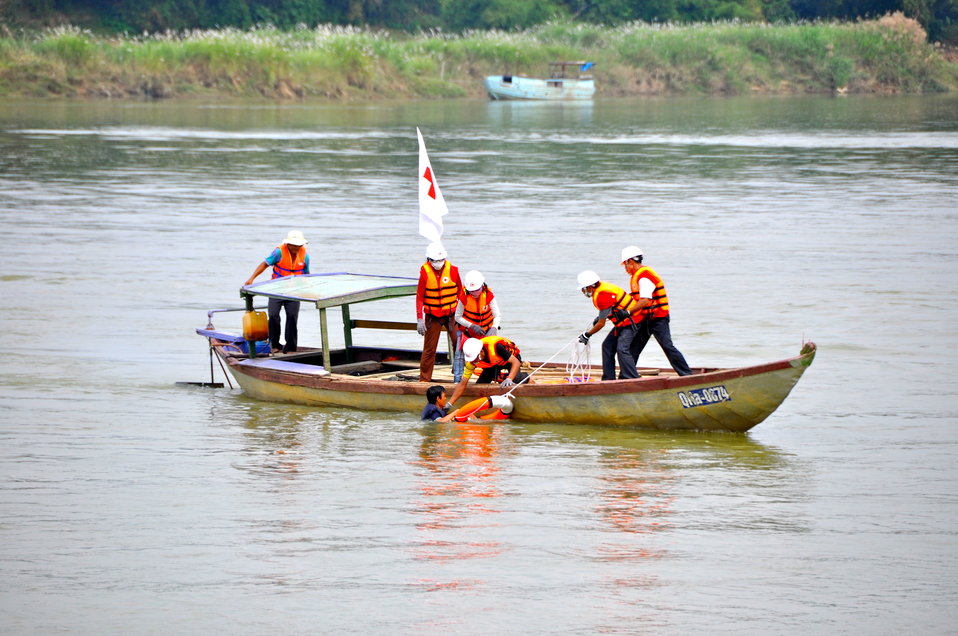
USAID, Red Cross Support Disaster Response Drill in Duy Hoa Commune, Quang Nam Province

Duy Hoa Commune, Quang Nam Province
December 5, 2012